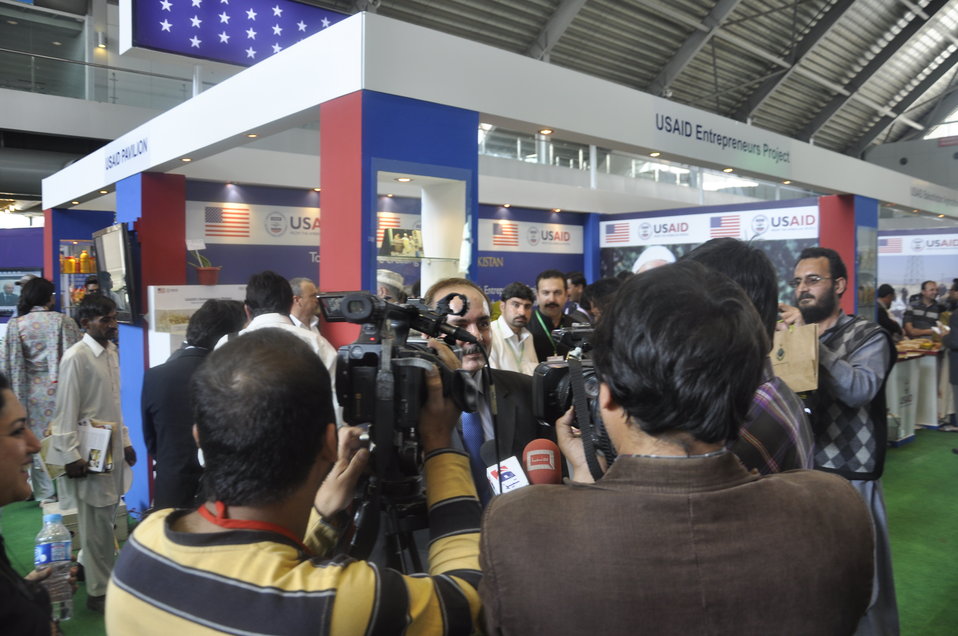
USAID's representative, Mr. Ghani Khan Marwat, while talking to Media at Dawn Sarsabz Pakistan Agri Expo.